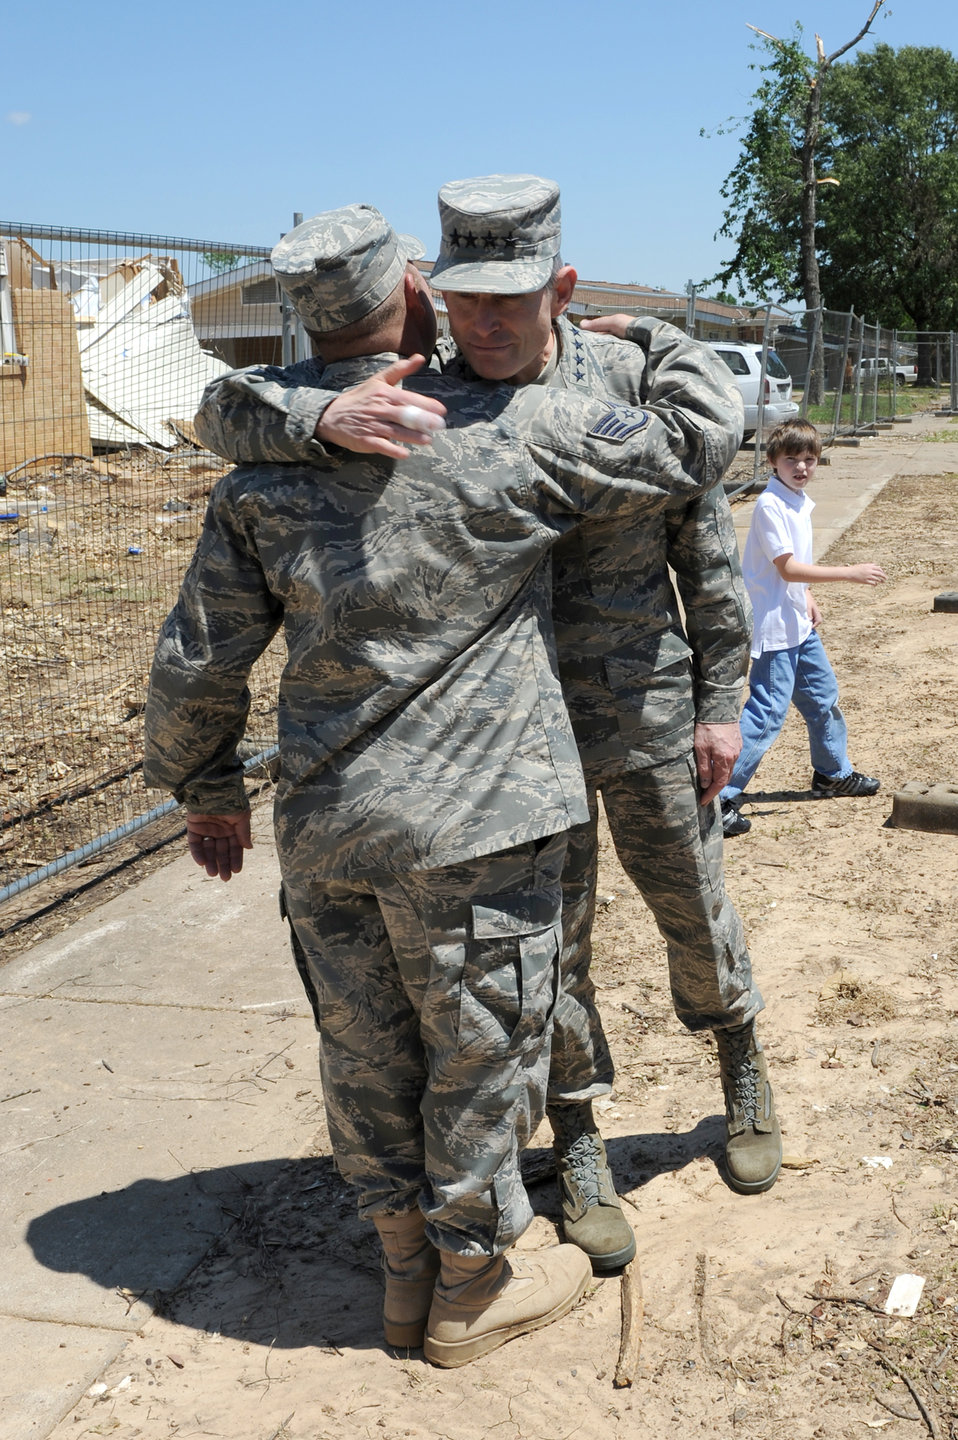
CSAF addresses AF issues, surveys tornado damage at Little Rock AFB

Air Force Chief of Staff Gen. Norton Schwartz hugs Staff Sgt. Eric Bramblett outside his base house May 4, 2011, at Little Rock Air Force Base, Ark. Sergeant Bramblett is a vehicle operator and dispatcher assigned to the 19th Logistics Readiness Squadron. He returned from a deployment to Iraq after his house was destroyed by the tornado that hit Little Rock AFB April 25, 2011.